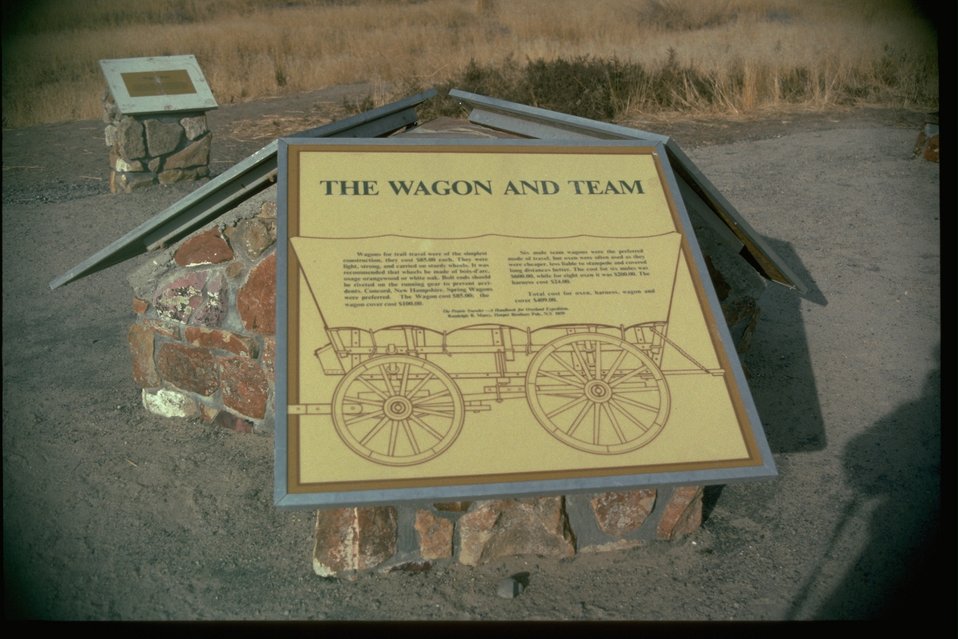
Panels of Oregon Trail site.